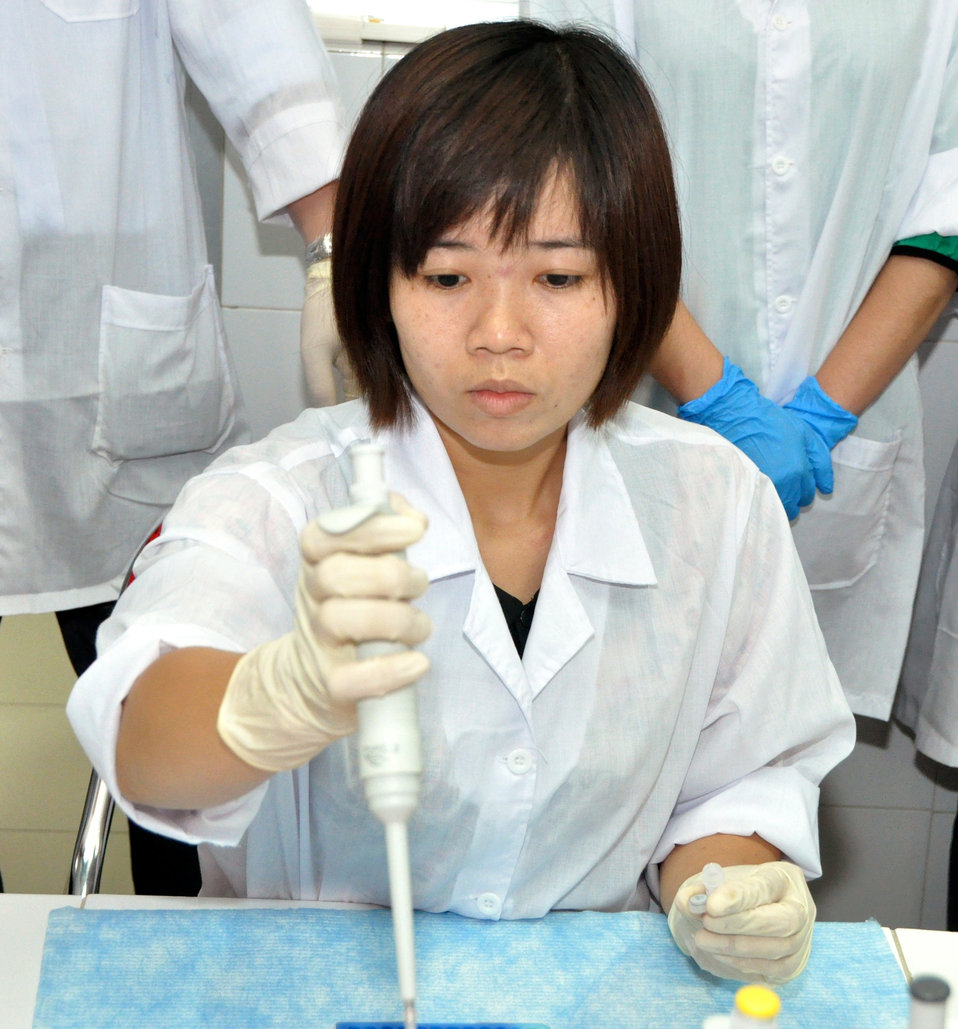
Animal virus detection lab training in Hanoi

Trainee learns how to detect viruses in Hanoi under a USAID program.